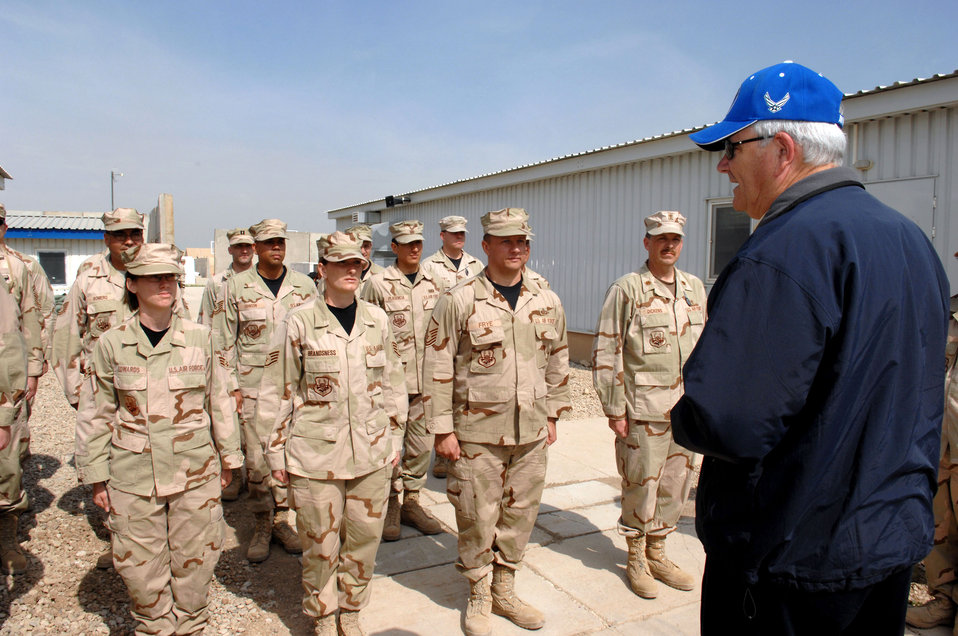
SECAF visits Airmen at Kirkuk

Secretary of the Air Force Michael W. Wynne talks with Airmen of the 506th Air Expeditionary Group while visiting March 28 at Kirkuk Regional Air Base in Iraq.